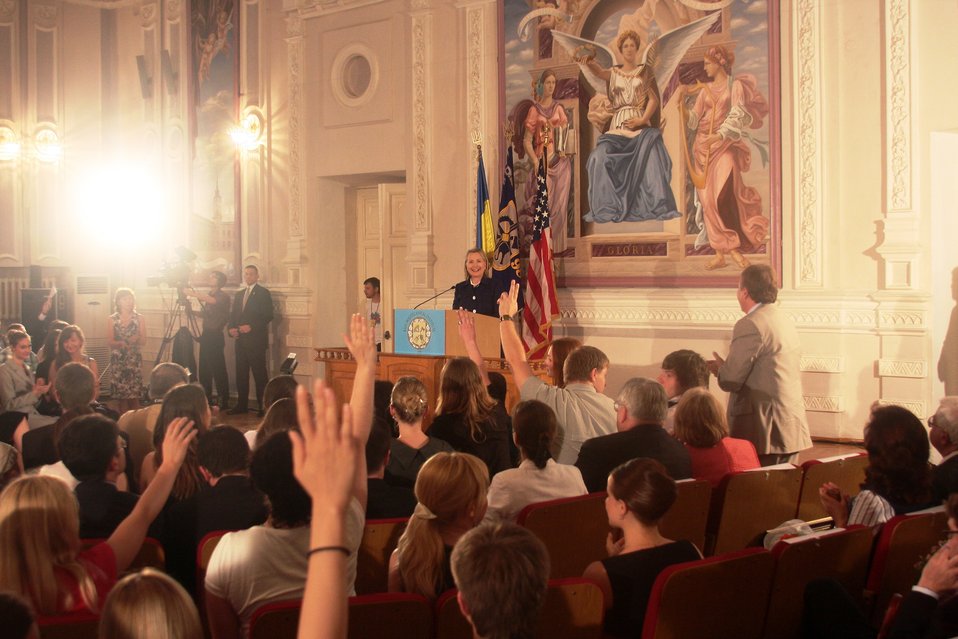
Secretary Clinton Addresses Kyiv Polytechnic Institute Town Hall

U.S. Secretary of State Hillary Rodham Clinton responds to students’ questions at Kyiv Polytechnic Institute in Kyiv, Ukraine, on July 2, 2010.